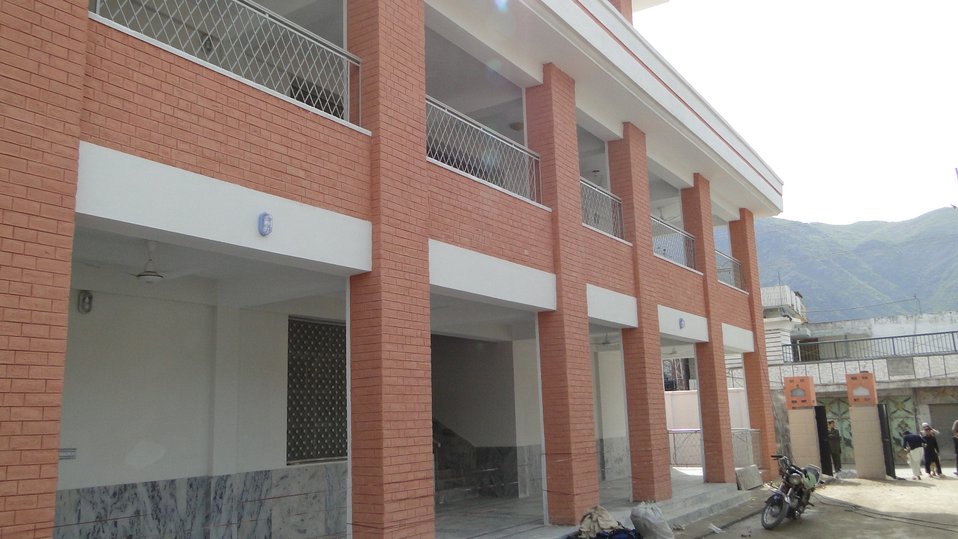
Buner School

Peshawar, March 14, 2012 - The Provincial Reconstruction, Rehabilitation and Settlement Authority (PaRRSA) handed over today to the KP Education Department the first of the 122 U.S. Government-sponsored schools at Torwarsak, Buner.